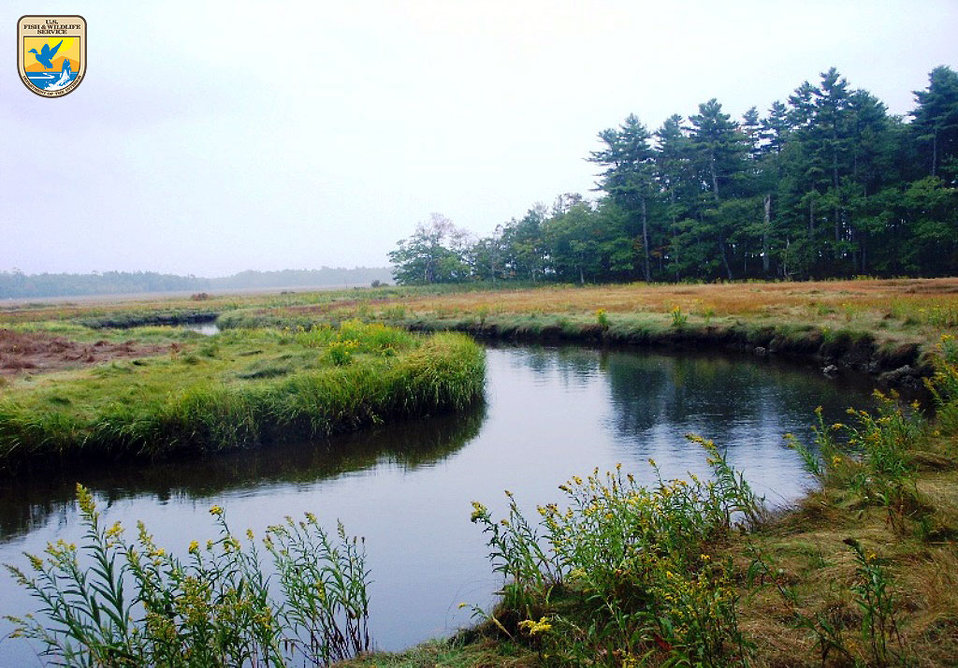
Branch Brook - Region 5

Branch Brook at Rachel Carson National Wildlife Refuge.